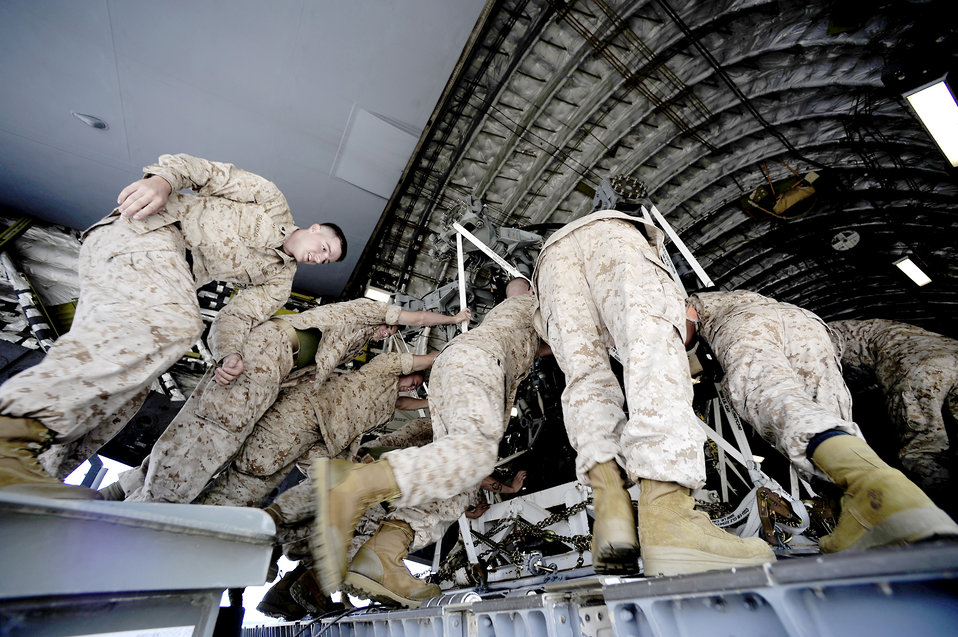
Pakistan flood relief effort

Airmen and Marines move a CH-53E Super Stallion onto a C-17 Globemaster III August 20, 2010, at Marine Corps Air Station Cherry Point, N.C. The helicopter is one of four that will be used to supplement U.S. military rescue and relief efforts in the flood affected areas of Pakistan. The Airmen are assigned to the 14th Airlift Squadron at Joint Base Charleston, S.C., and the Marines are assigned to the 26th Marine Expeditionary Unit Marine Corps Air Station Cherry Point, N.C.